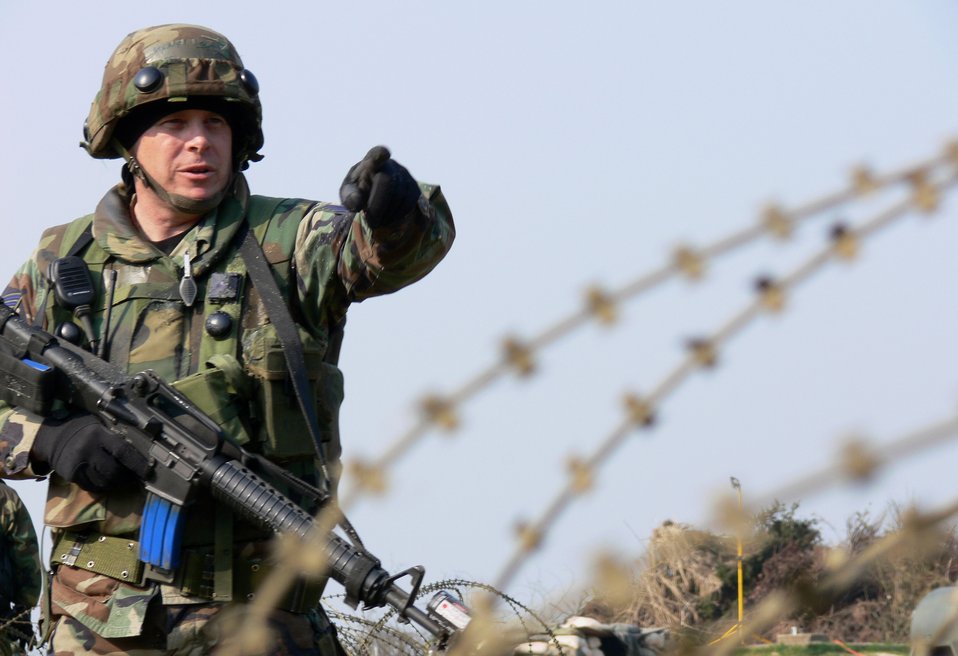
Combat comm Airmen hone skills in field training

Staff Sgt. Leslie Jimerson calls out approaching locals during a field training exercise in Bitburg, Germany. Different scenarios were thrown at the 1st Combat Communications team to ensure they understood and applied the knowledge needed to handle noncompliant individuals downrange. Sergeant Jimerson is a 1st CC technical controller. Hostetter.)